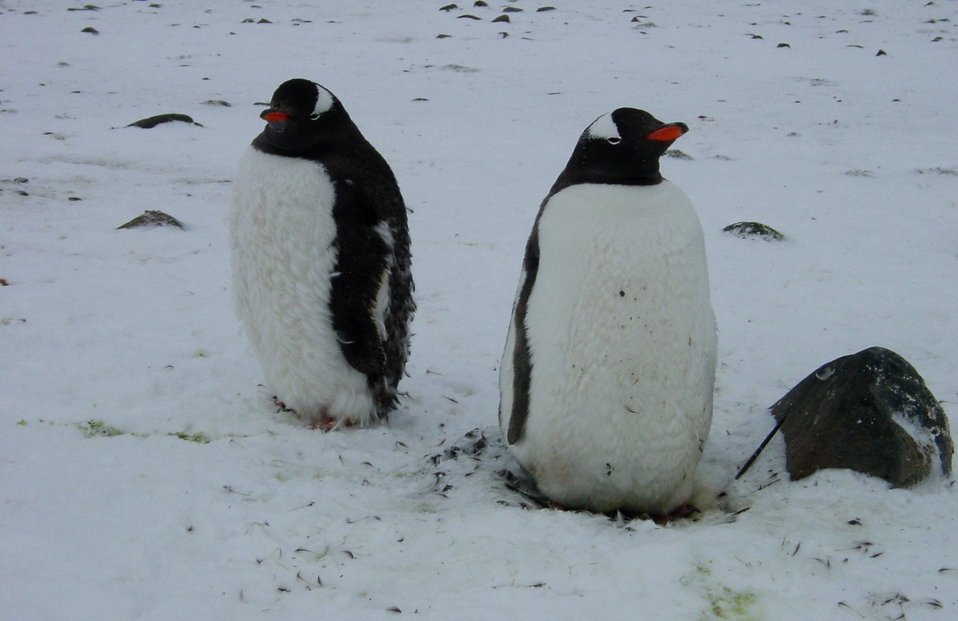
Gentoo penguins